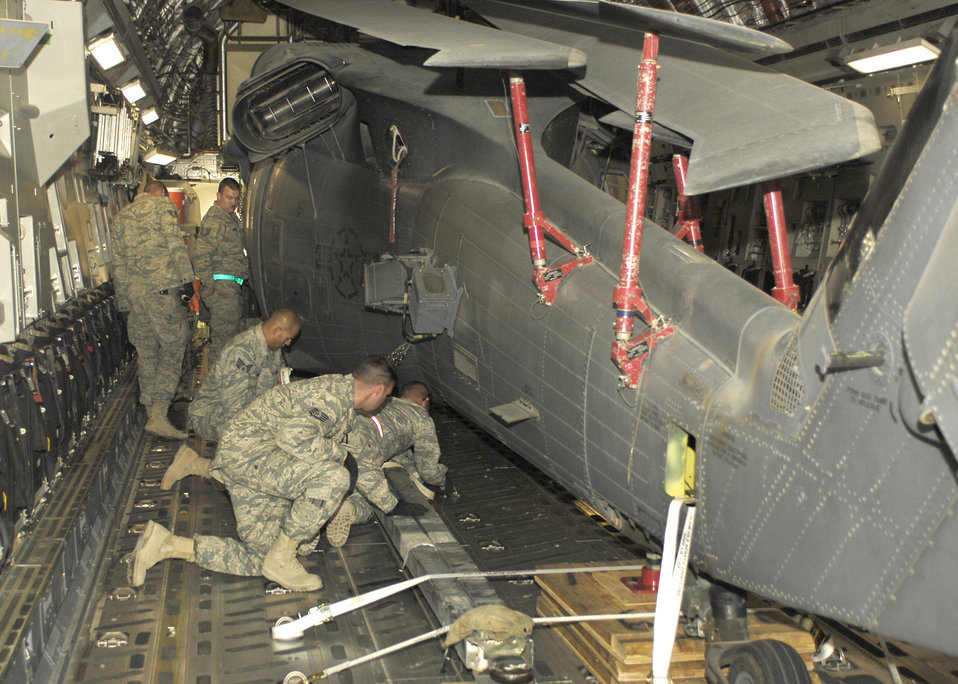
Flying a hawk home

Members of the 455th Expeditionary Aircraft Maintenance Squadron ensure an HH-60G Pave Hawk is secure aboard a C-17 Globemaster III Sept. 9, 2009, at Bagram Airfield, Afghanistan. The Pave Hawk is on its way back to home station after a tour of duty here.